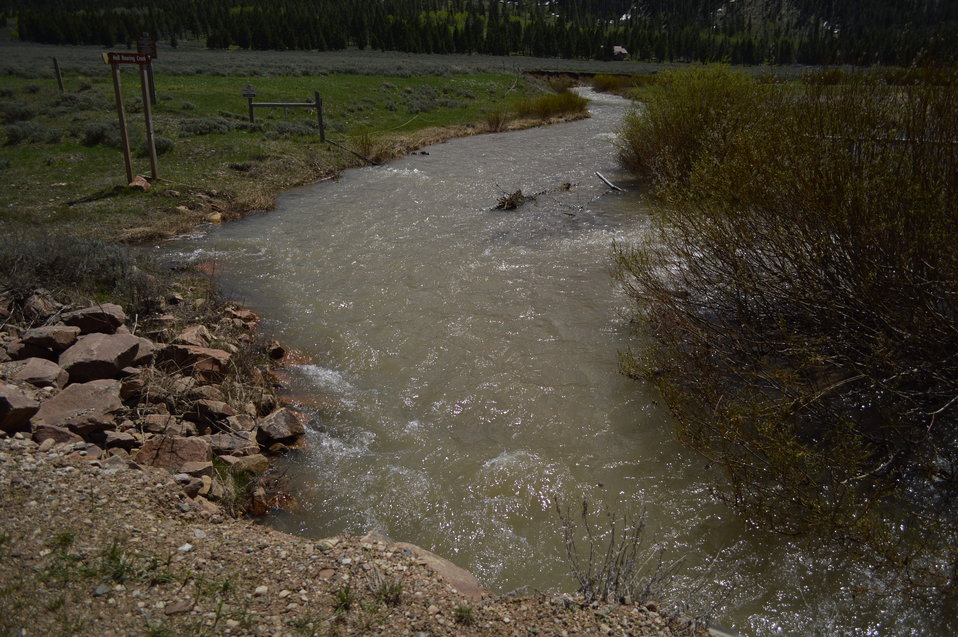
Regional Leadership Visit to Montana 2014